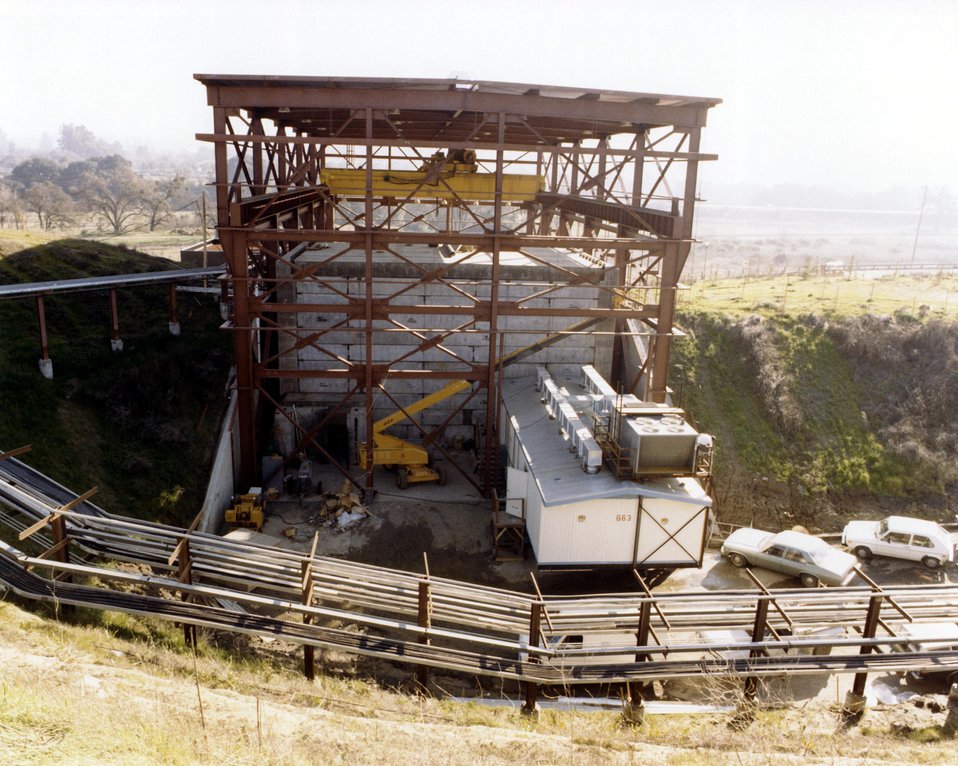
EXTERIOR VIEW OF REGION 6 DETECTION BUILDING.

THE POSITRON-ELECTRON PROJECT (PEP) IS A JOINT UNDERTAKING OF STANFORD LINEAR ACCELERATOR CENTER (SLAC) AND THE LAWRENCE BERKELEY LABORATORY (LBL). THE PEP MACHINE IS DESIGNED TO STORE BEAMS OF ELECTRONS AND POSITRONS CIRCULA- TING IN OPPOSITE DIRECTIONS AT SINGLE-BEAM ENERGIES BETWEEN 4 GEV AND 18 GEV. THE SOURCE OF THE BEAMS WILL BE THE PRESENT SLAC ACCELERATOR. THE COUNTER-ROTATING BEAMS OF ELECTRONS AND POSITRONS WILL COLLIDE WITH EACH OTHER AT SIX POINTS IN THE MACHINE. THESE COLLISION OR BEAM-INTERACTION POINTS WILL BE USED FOR HIGH-ENERGY PHYSICS EXPERIMENTS.